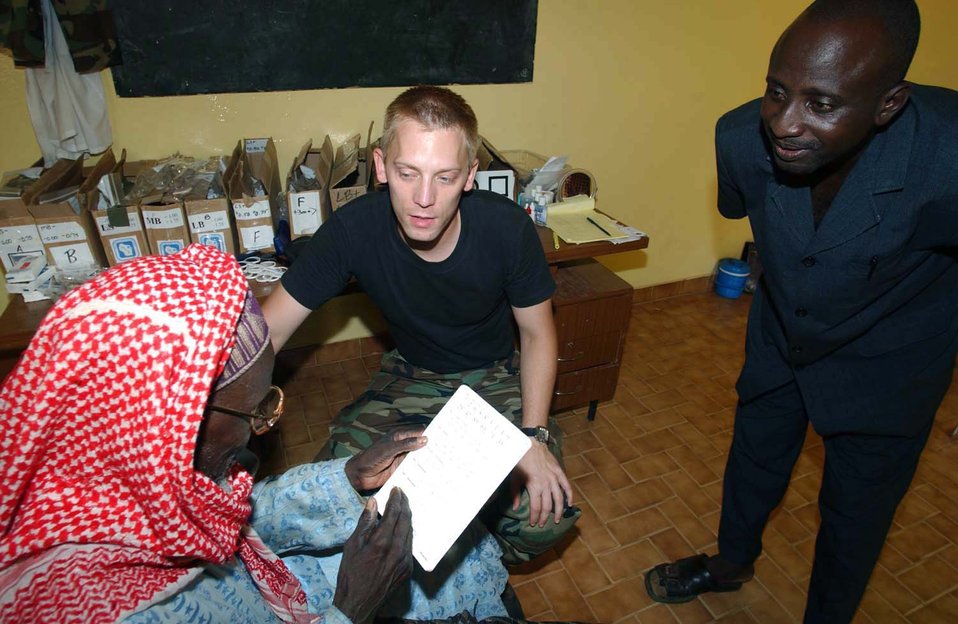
Lost without translation

CAMP TONDIBIAH, Niger -- Capt. (Dr.) Steven Tittl and his translator, Moussa Tankari, assist a Nigerien man during his eye exam. Mr. Tankari was one of seven civilian translators Air Force Reserve medics worked with during a humanitarian mission here. Dr. Tittl is an optometrist assigned to the 439th Aerospace Medical Squadron at Westover Air Reserve Base, Mass.